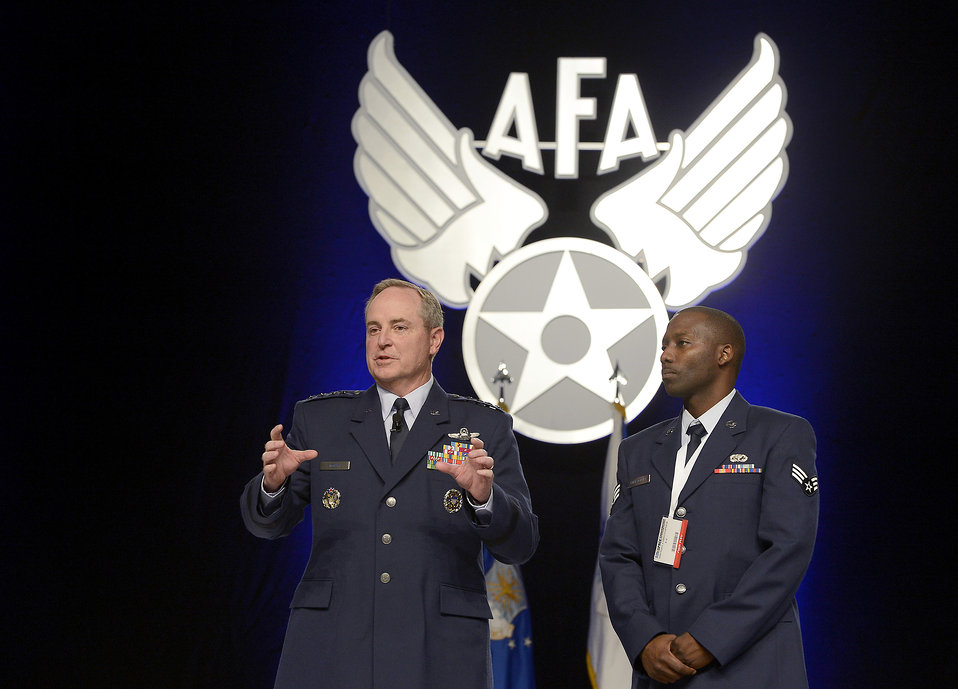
CSAF talks Air Force innovation, evolution at AFA Conference

Air Force Chief of Staff Gen. Mark A. Welsh III introduces Senior Airman Shemiel Christopher for his work at the Dover Air Force Base, Del., Fisher House during his keynote presentation on the state of the Air Force at the Air Force Association's Air and Space Conference and Technology Exposition in Washington, D.C., Sept. 18, 2012.